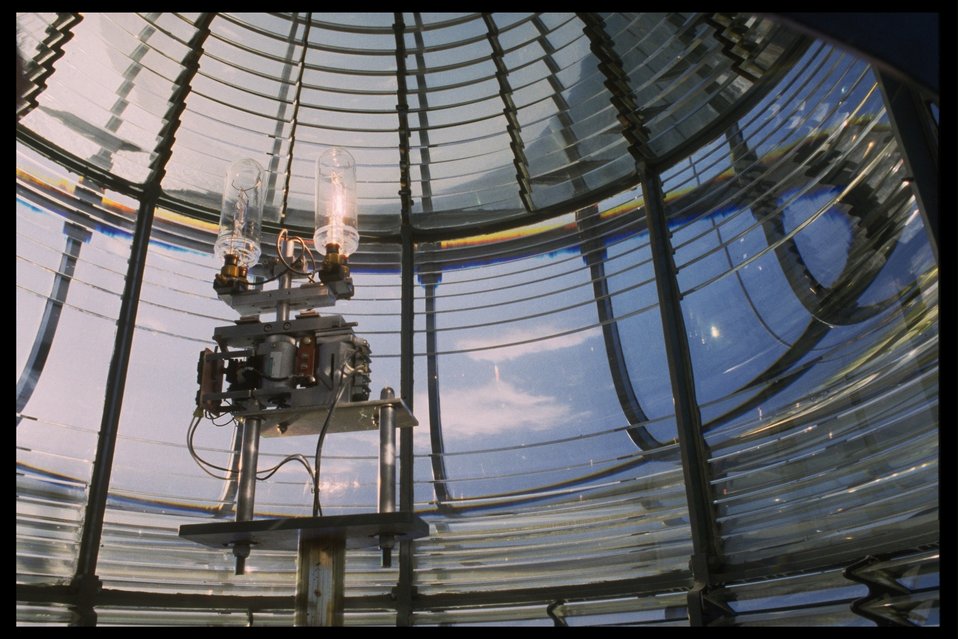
The lightbulb (1000 watt lens) on the interior of the Yaquina Head lighthouse.